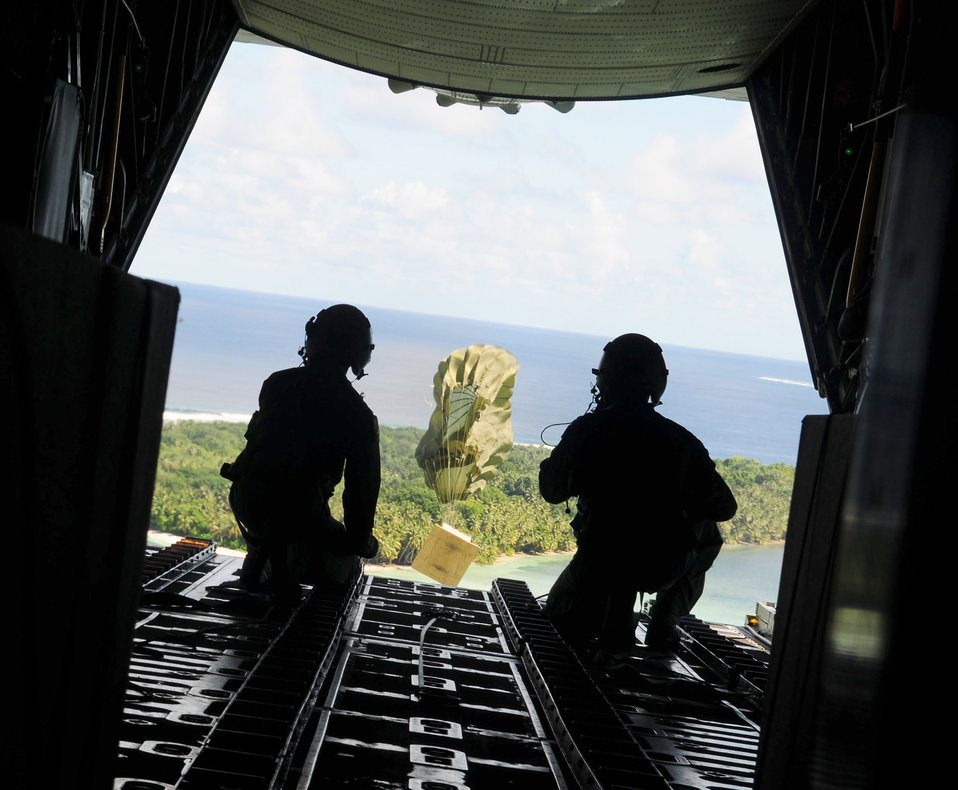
Operation Christmas Drop

Airmen watch as the parachute deploys and a box of humanitarian goods drops during Operation Christmas Drop Dec. 14, 2010, over the Yap Islands, Commonwealth of the Northern Marianas Islands. The Airmen are assigned to the 36th Airlift Squadron at Yokota Air Base, Japan.